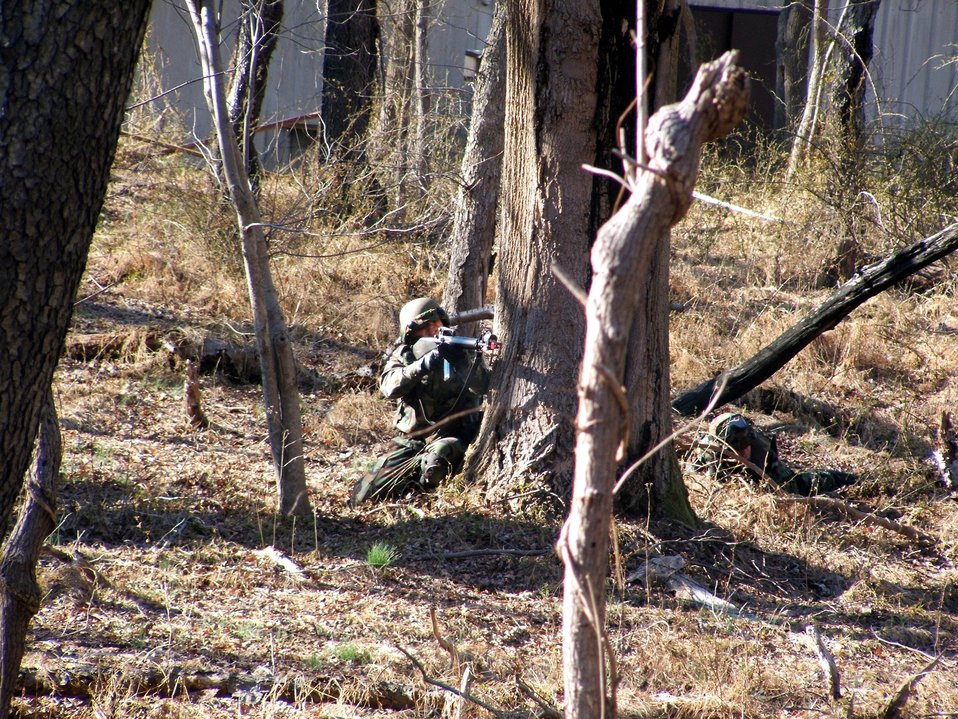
Contingency skills training

An Airman engages in simulated hostile forces while practicing combat tactics and squad patrolling maneuvers during training at Fort Dix, N.J., on Monday, March 27, 2006. More than 140 Airmen are participating in the Air Force Integrated Contingency Skills Training Course 06-3, which includes combat tactics and convoy operations.